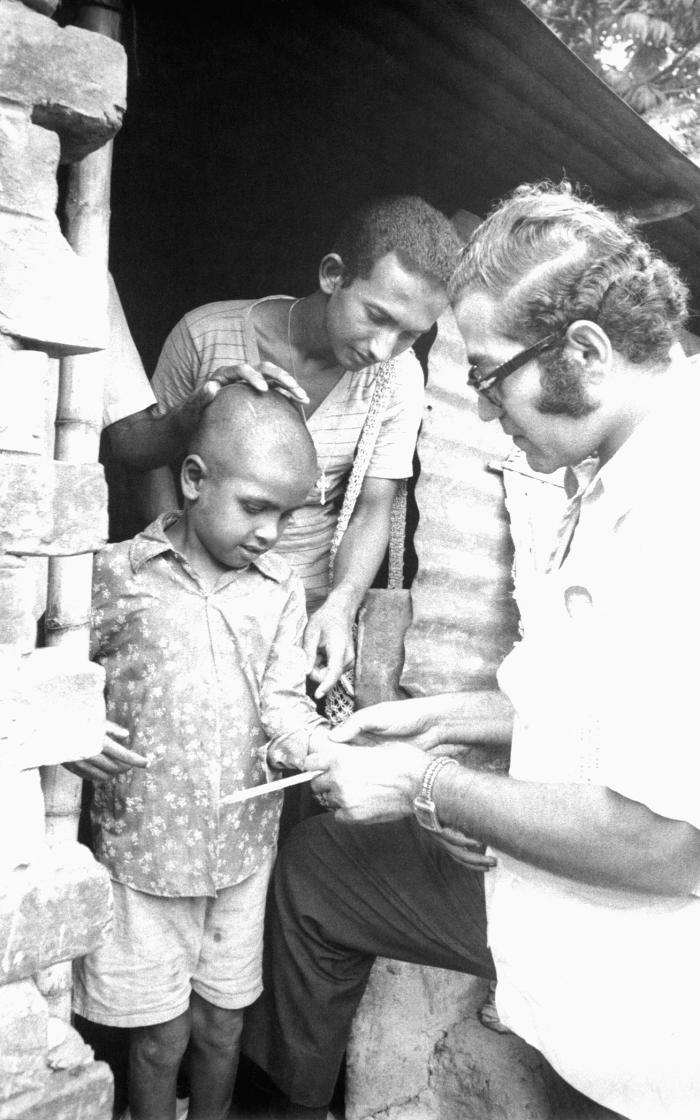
This photograph depicted World Health Organization (WHO) epidemiologist Dr. Ali Mourad as he was examining a child in order to see if his previous vaccination was successful.In 1968, the World Health Organization (WHO), and other world public health organizations - led by the United States and the then-Soviet Union - came together to join in the fight to eradicate smallpox from the world. The worldwide eradication of this dreaded virus was due to this Smallpox Eradication Campaign, whereupon, a mass-vaccination program was instituted across the globe that lead to the declaration in 1978 by a global commission that smallpox had been eradicated, which was officially accepted by the 33rd World Health Assembly in 1980. Smallpox is a serious, contagious, and sometimes fatal infectious disease.